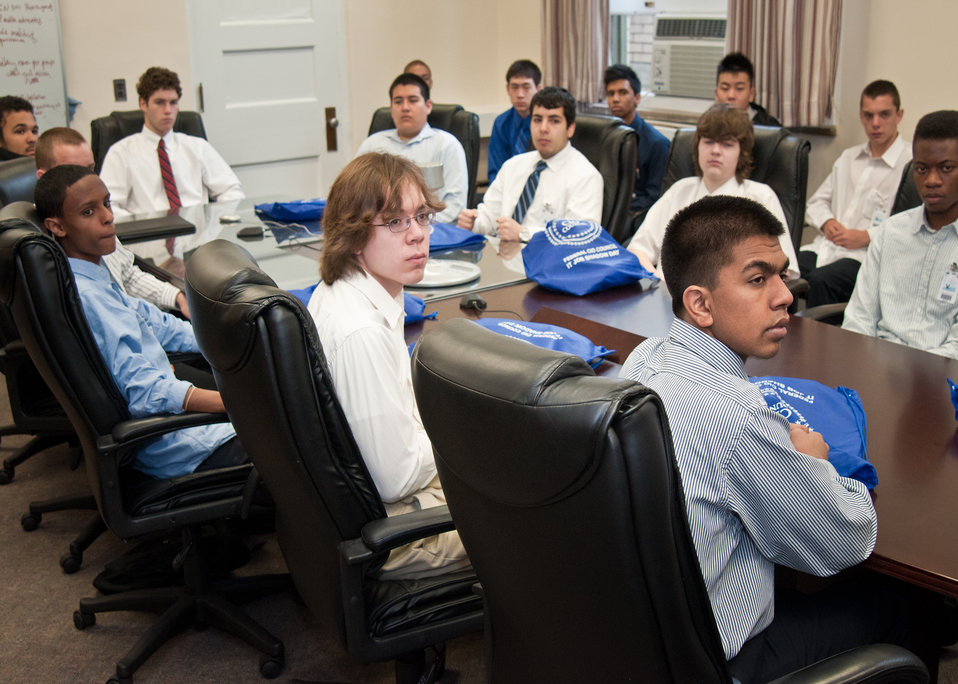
Clockwise from left: Adam Hussien, David Bellomy, Nebil Maeruf, Colby Shinholser, Michael Hughes, Gregory Ridgeway, Xavier Acosta Ramsey Khadder, Patrick Lehan, Springbrook High School, Silver Spring, Maryland and David Thompson, Eleanor Roosevelt High School, Greenbelt, Maryland, members of the Academy of Information Technology listen to Chris Smith, Chief Information Officer during a visit to the United States Department of Agriculture (USDA) on Wednesday, April 13, 2011. USDA holds an Information Technology Job Shadow Day annually. It is an opportunity for students from local high schools to learn the breadth and depth of information technology at USDA and how it is applied the department.